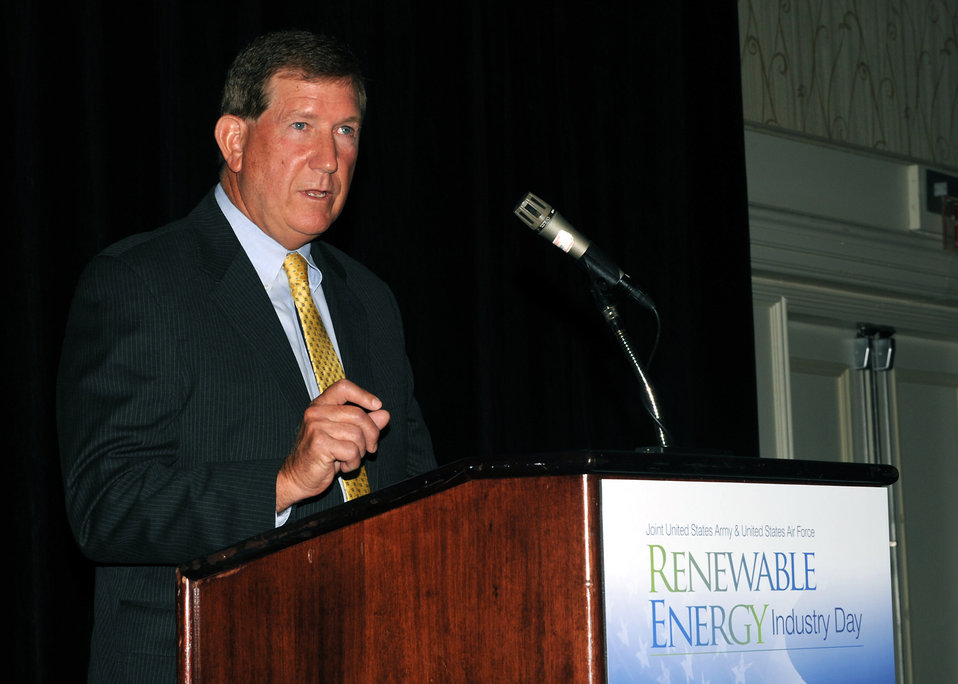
Leaders speak at renewable energy industry day event

Terry Yonkers speaks at the Joint United States Army and United States Air Force Renewable Energy Industry Day on June 12, 2012, in Washington. The event brought together government and industry leaders to discuss opportunities for public-private collaboration in renewable energy development. Yonkers is the assistant secretary of the Air Force for Installations, Environmental, and Logistics.